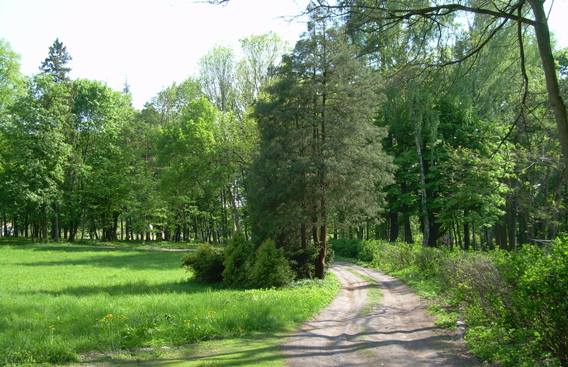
Polski: 'Park' w Antopolu, za tymi drzewami znajduje się droga wojewódzka nr 830